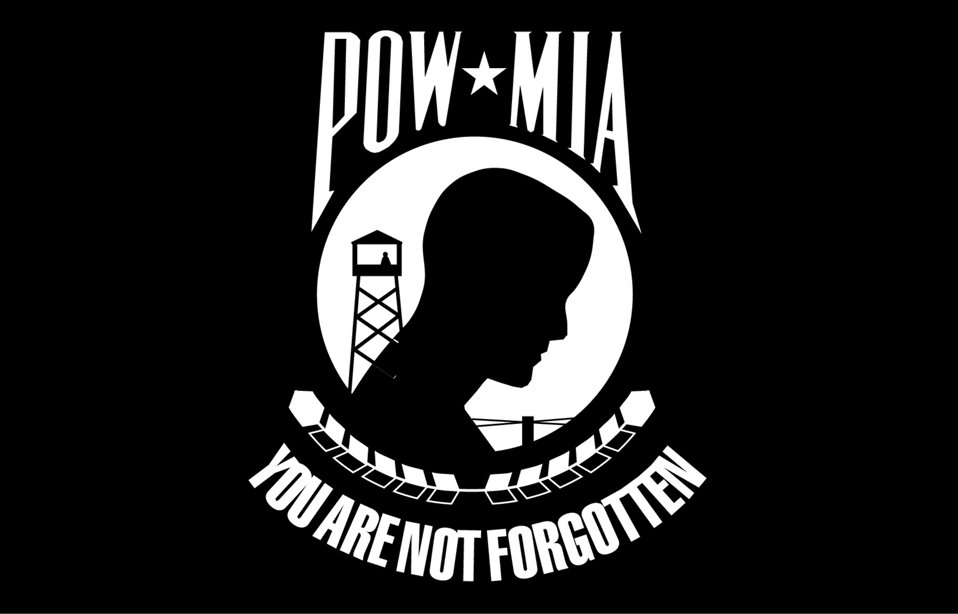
POW-MIA flag.